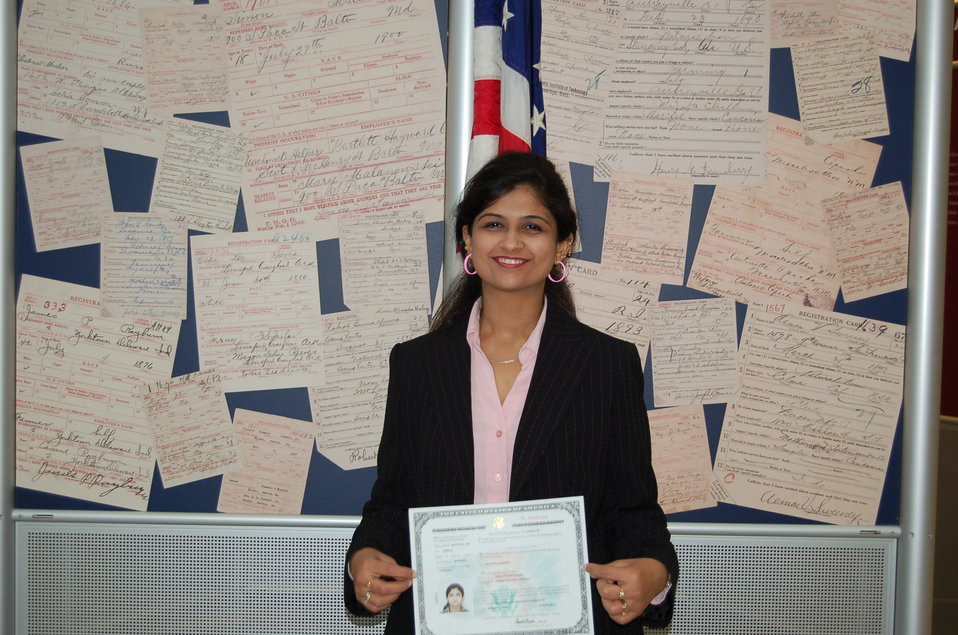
New Citizens